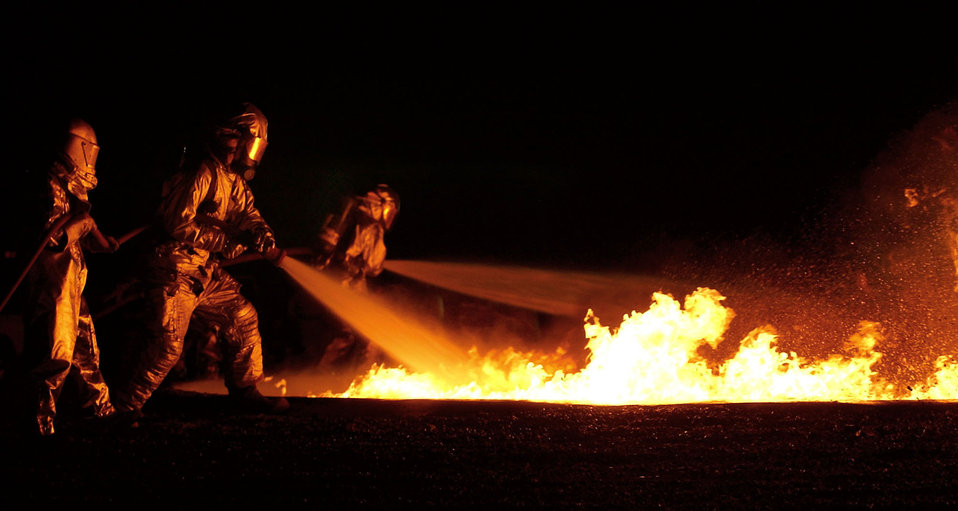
Fire pit

OPERATION IRAQI FREEDOM -- Firefighters assigned to the 321st Expeditionary Civil Engineering Squadron extinguish a fire during a joint fire pit training exercise held at a forward-deployed location in support of Operations Iraqi Freedom, April 15, 2003. This exercise was a combined effort involving American and host nation firefighters to train and learn techniques that are practiced during actual fire responses.